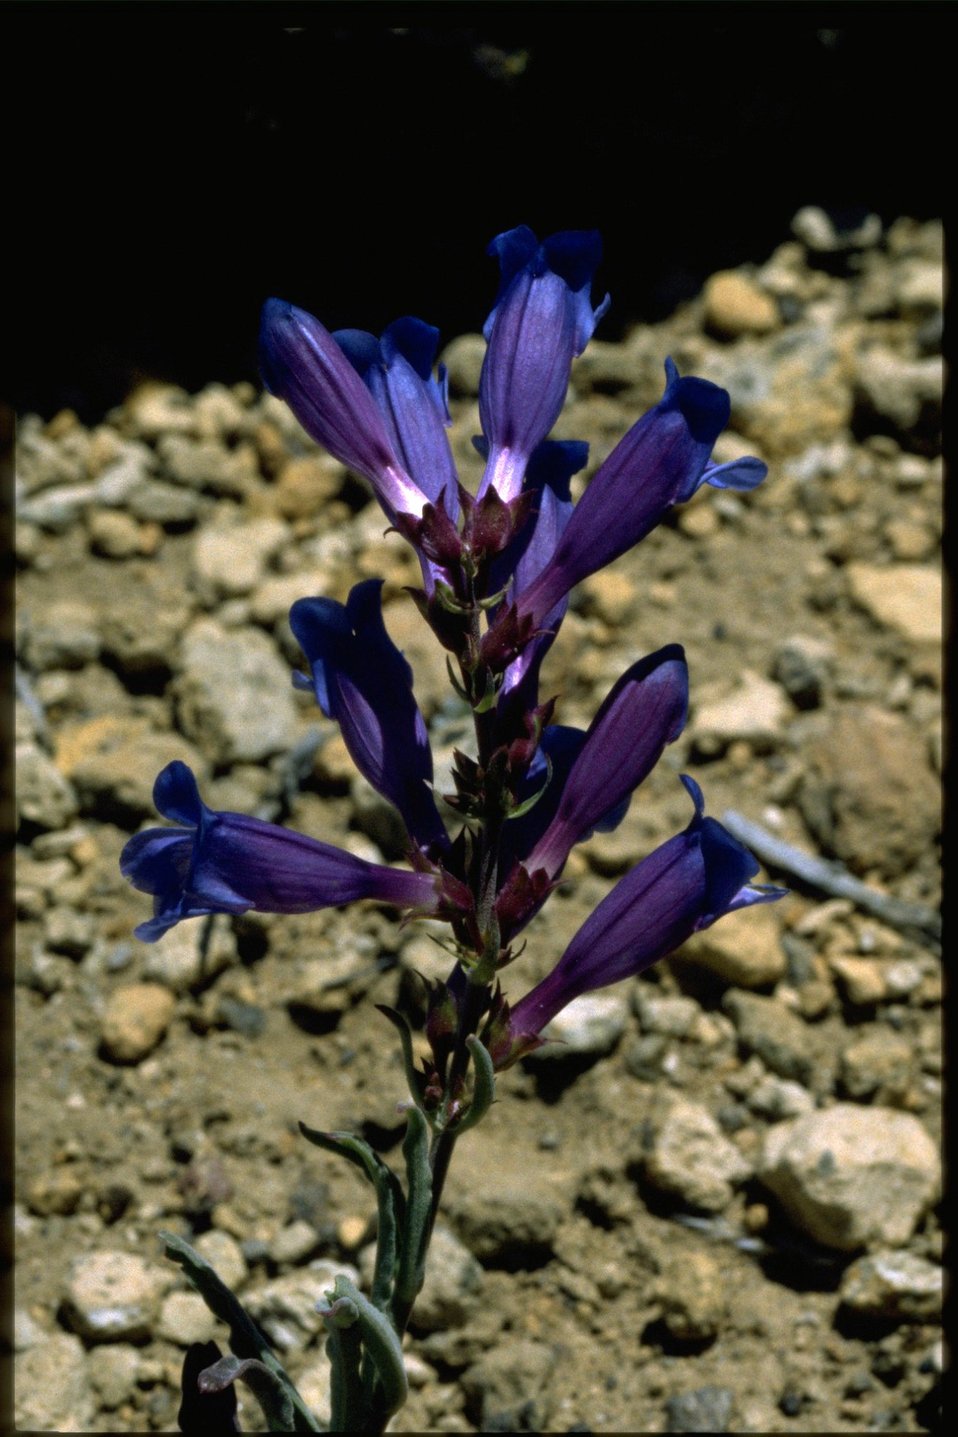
Medium shot of penstemon wildflowers.